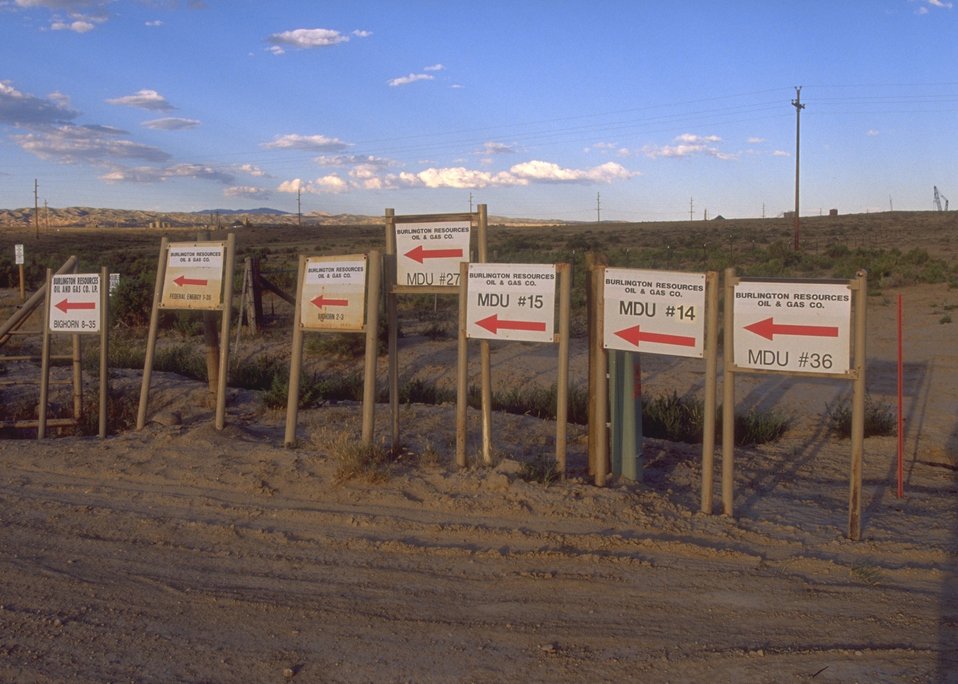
Signs showing location of drill units, Casper Field Office.